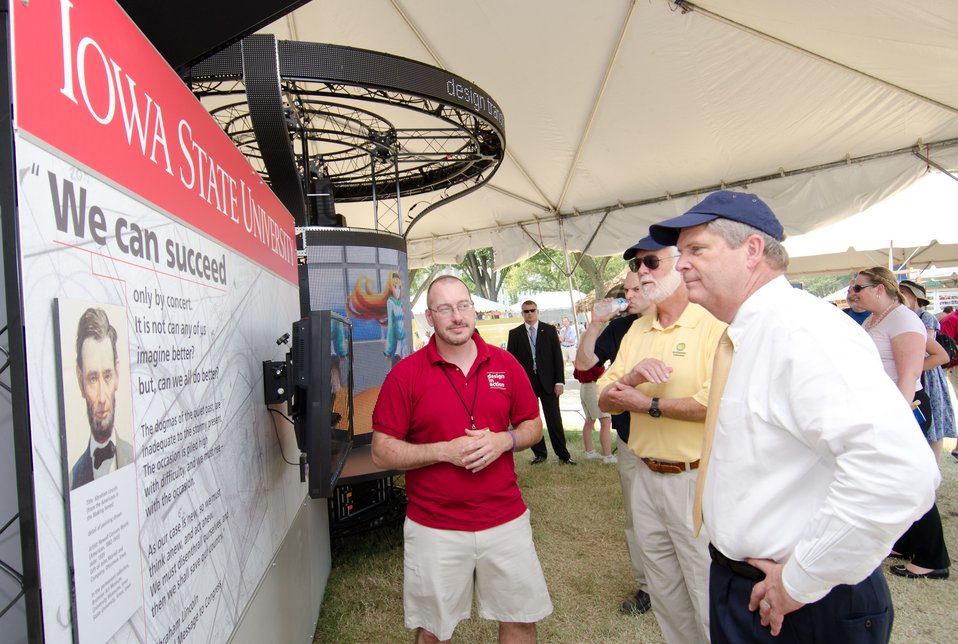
Agriculture Secretary Tom Vilsack (right) listens to Iowa State University Industrial Design Director David Ringholtz talk about the University’s “Transforming Communities: Design in Action,” exhibition at the 2012 Smithsonian Folklife Festival, on the National Mall in Washington, D.C., on Friday, June 29, 2012. The University says, “Iowa State’s folklife festival exhibit highlights the central role of design in the land-grant mission, and extension’s past, present and future impact on communities. It demonstrates a unique partnership between the College of Design and Extension and Outreach in applying creative problem solving to society’s complex challenges.' Their exhibition, “Transforming Communities: Design in Action,” is inspired by Abraham Lincoln’s 1862 national call to “think anew and act anew” to solve the monumental challenges of the era that spawned the Morrill Act. It features examples of the university's completed and ongoing projects in Iowa communities, touch screen workstations with games for children and adults, and interactive activities with Iowa State faculty and staff.” One of the three themes this year is “Campus and Community.” It celebrates the 150 years of the USDA and the Land-Grant University System. The U.S. Department of Agriculture (USDA) and the Land-Grant system extend education across the country, contributing to American agriculture success and rural prosperity. “Campus and Community” has demonstrations, discussions, hands-on activities, and entertainment to that showcase the many ways that this partnership works to improve American agriculture and rural life.